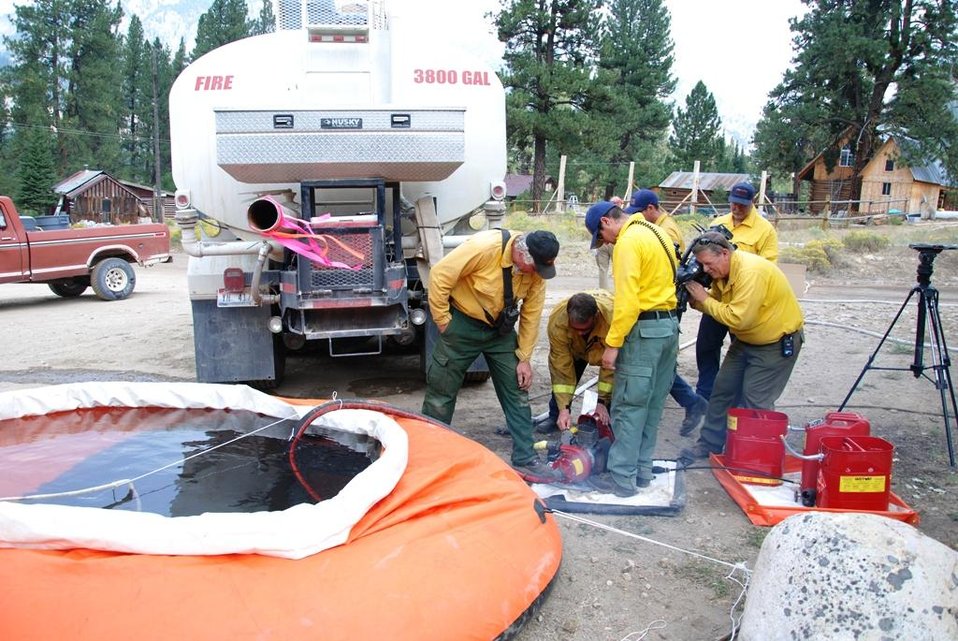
Fire crews set up a portable water tank at the Little Queens Fire Incident Command Post (ICP). The Little Queens Fire in Boise National Forest near Atlanta, ID began on Aug. 17, 2013 is under investigation. The fire has consumed approximately 20,956 acres and is 10% contained.